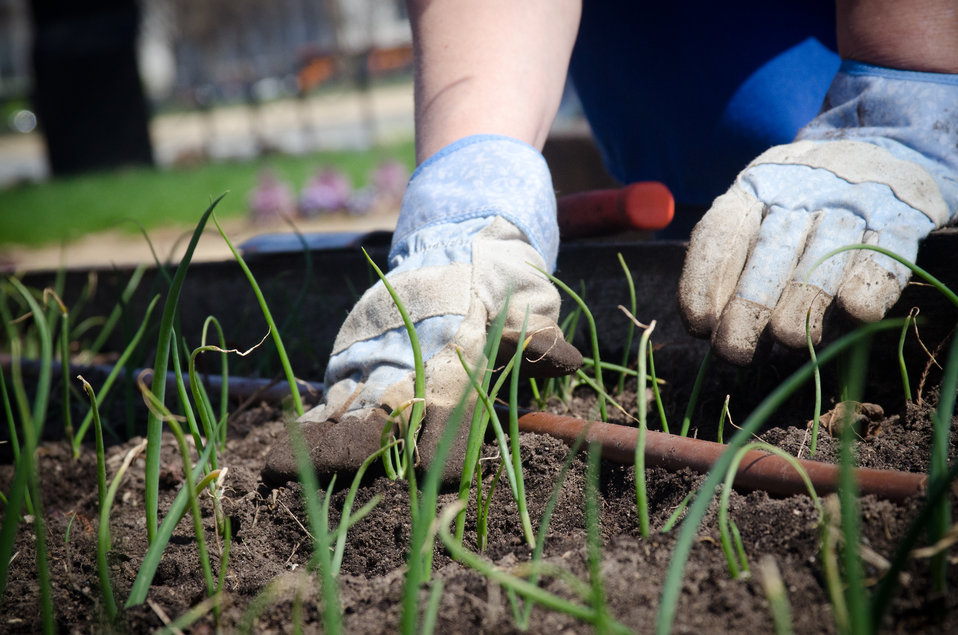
All work is done by hand, in The People's Garden at the U.S. Department of Agriculture (USDA), Washington D.C., on Thursday, March 17, 2011. Volunteers pitch in several times a week, to weed, mulch, plant, water and what ever it takes to grow a wide variety of produce. Although a few are ornamental, most are destined for charity kitchens. Located on the corner of Jefferson Drive, SW and 12th St. SW, people often stop to ask questions about the garden. Part of the volunteers’ training is to be a spokesperson for the People's Garden Initiative, an effort by the USDA that challenges its employees to establish People's Gardens at USDA facilities worldwide or help communities create gardens. People's Gardens vary in size and type, but all have a common purpose - to help the community and the environment.